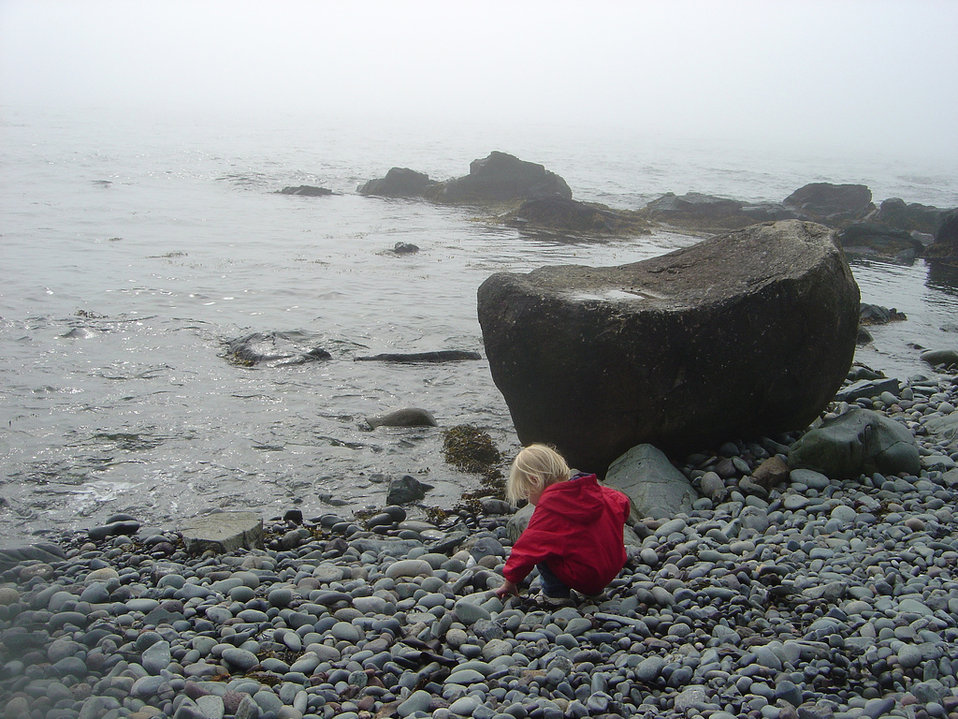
Exploration

Uploaded for Flickr member julesemail58.

Kara throwing rocks at the eastern most point in the U.S.